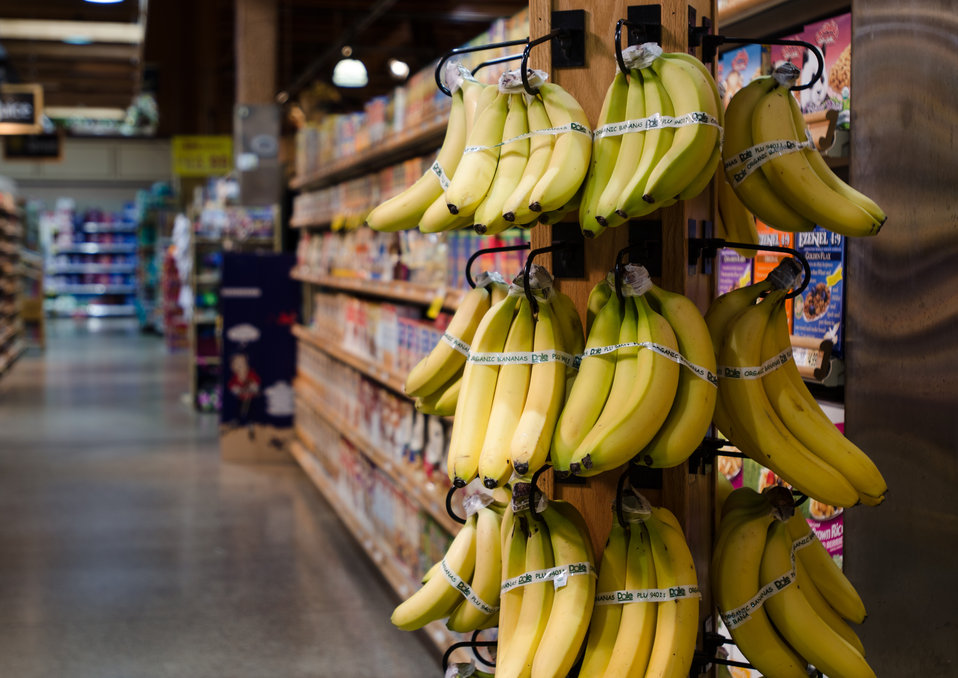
Bananas and cereals at a grocery store in Fairfax, Virginia, on March 3, 2011.